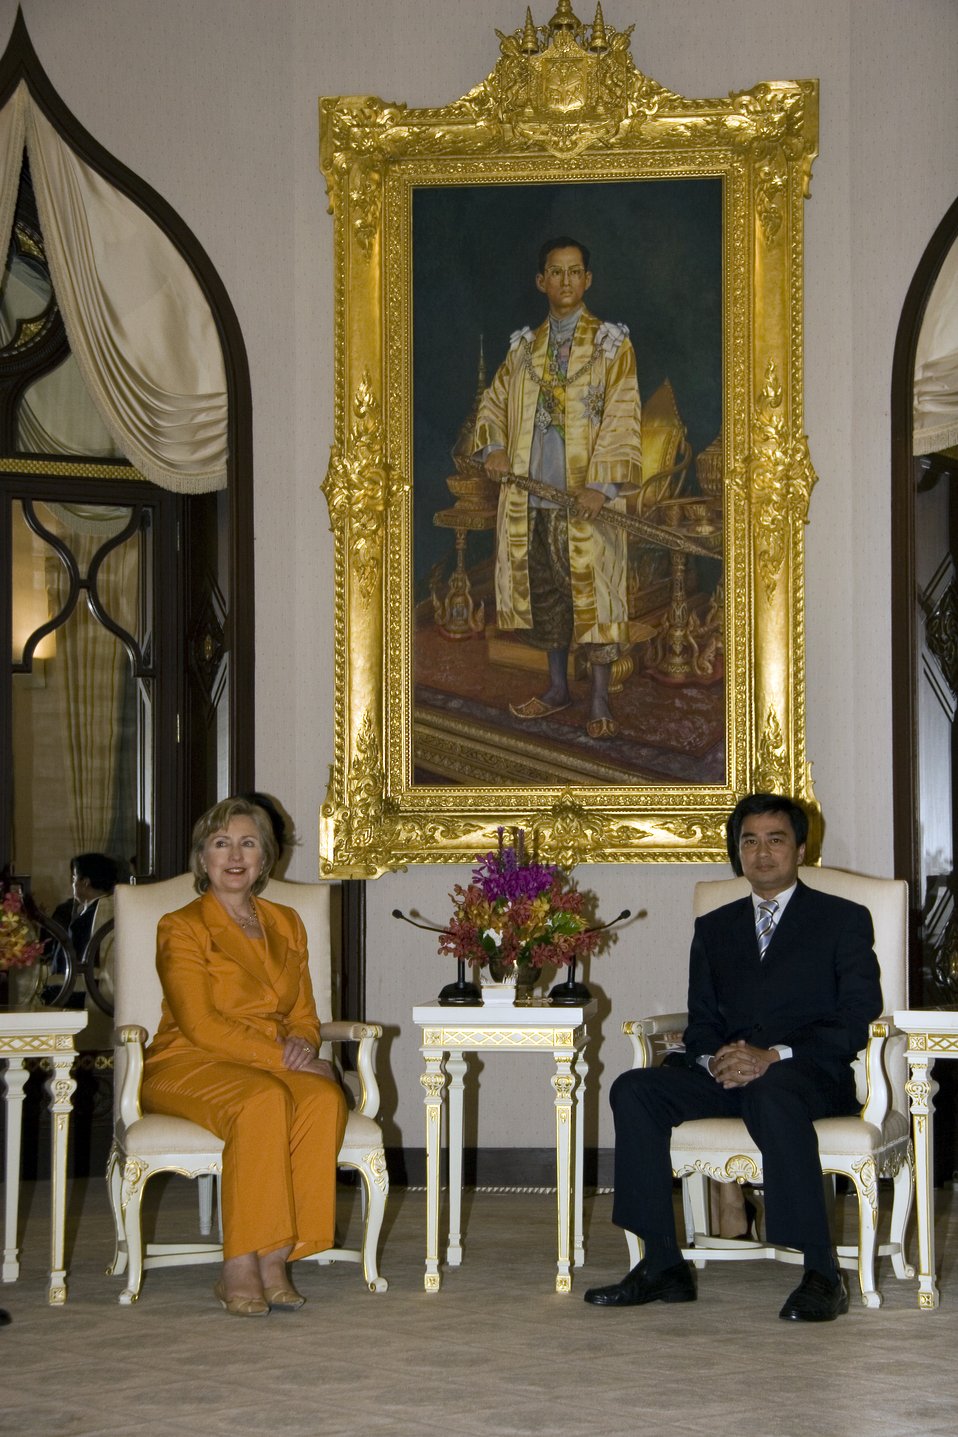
U.S.-Thailand Bilateral Meeting

U.S. Secretary of State Hillary Rodham Clinton and Thai Prime Minister Abhisit Vejjajiva seated prior to the bilateral meeting at Government House in Bangkok, Thailand July 21, 2009.